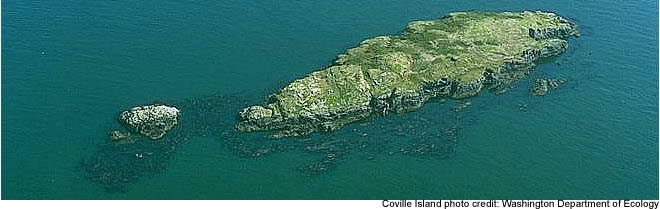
Coville Island - San Juan Islands NWR

Coville Island is one of 83 islands in the San Juan archipelago, totaling 454 acres. Islands are categorized into four major habitat types: reefs, rocks, grassy islands, and forested islands.